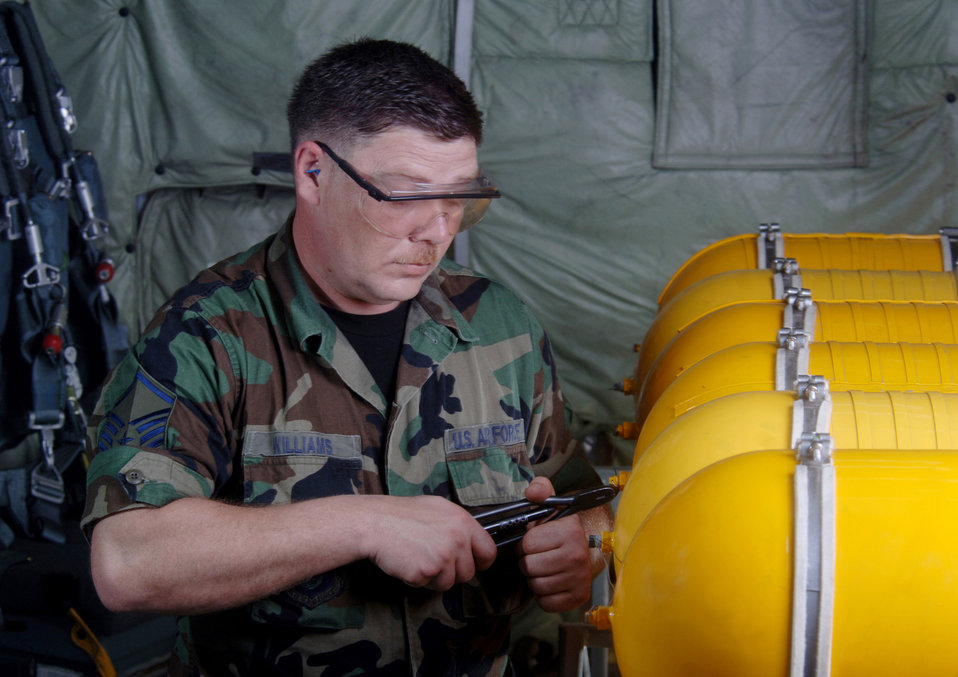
Alaska Airmen work at Guam

ANDERSEN AIR FORCE BASE, Guam (AFPN) -- Master Sgt. Mike Williams tightens a safety wire on oxygen bottles inside a KC-135 Stratotanker during an inspection here. Sergeant Williams is a crew chief with the 168th Air Refueling Wing of the Alaska Air National Guard at Eielson Air Force Base. The wing trains and equips KC-135R crews to provide air refueling in support of worldwide taskings.